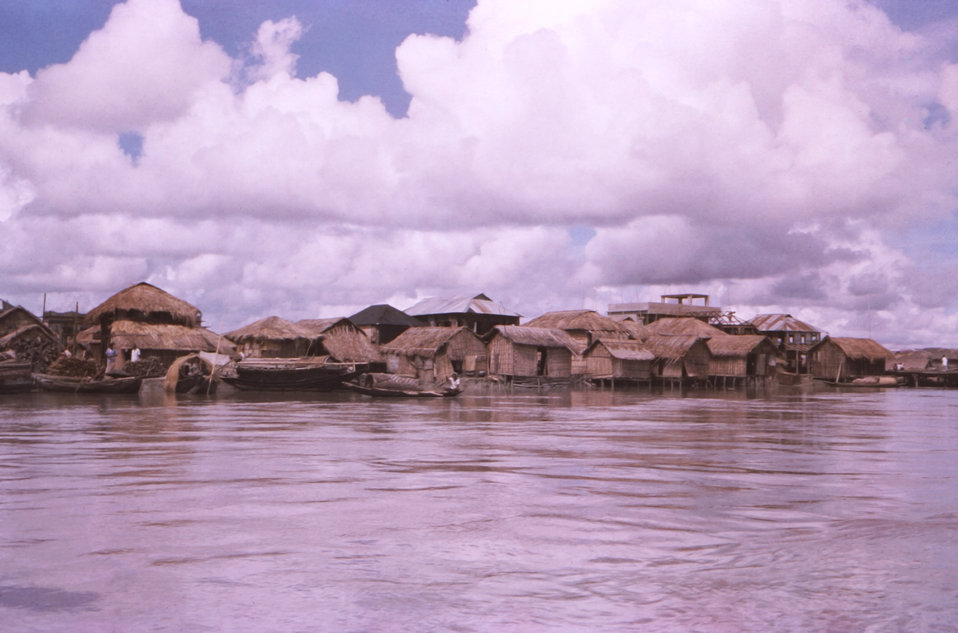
This photograph, which was captured in October, 1975, depicted a view from aboard a boat on the Bay of Bengal, of a typical Patuakhali District village, in the country of Bangladesh. At the time when this image was captured, there were 900 villages in Patuakhali. See PHIL 12340 for another of this coastal village.